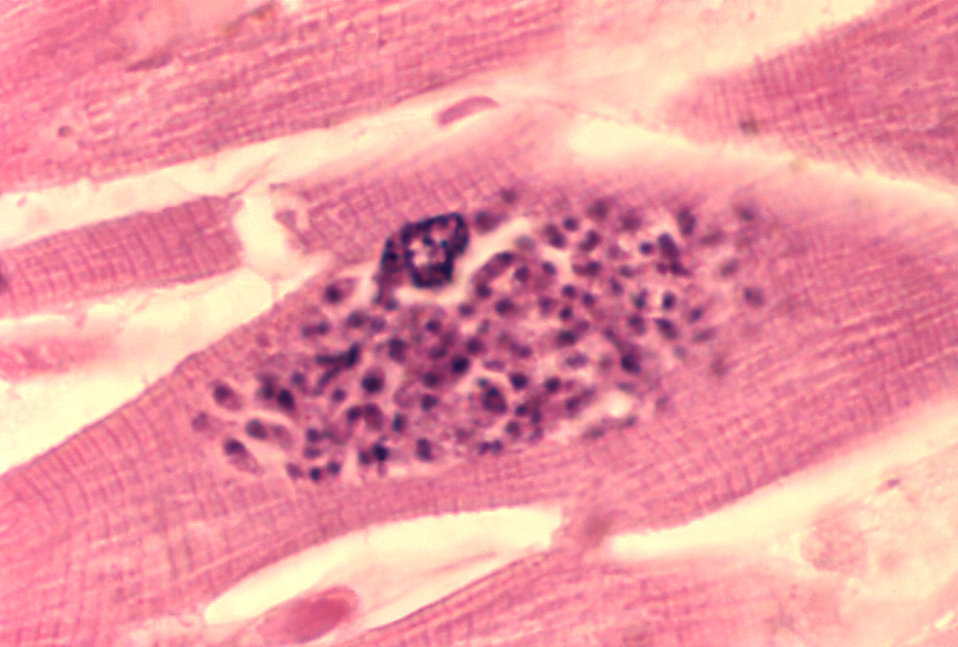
Toxoplasmosis of heart in AIDS.